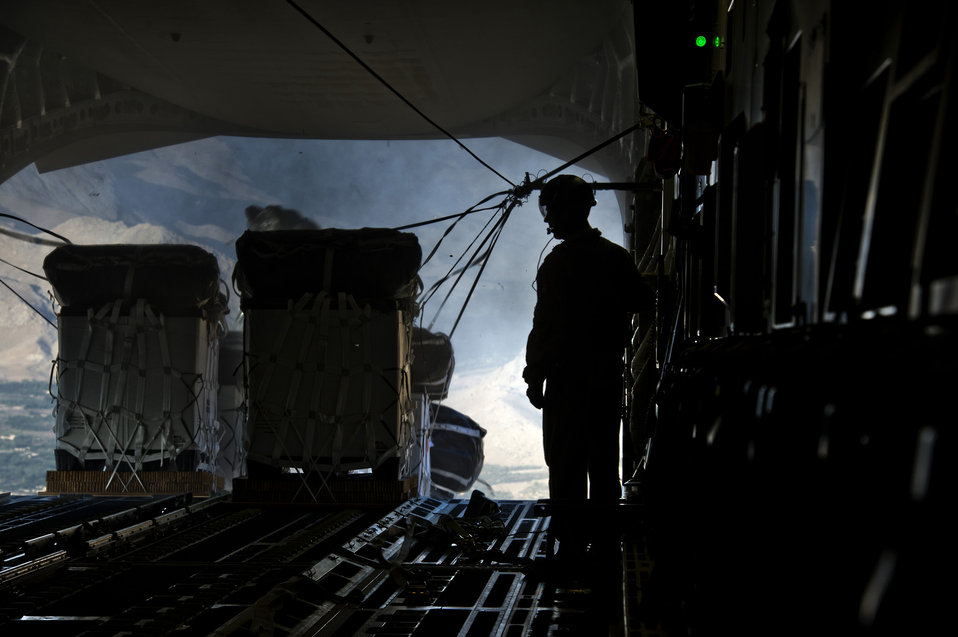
Airdrop over Afghanistan

A member of the 816th Expeditionary Airlift Squadron observes pallets dropped out the back of a C-17 Globemaster III over Afghanistan, Sept. 30, 2011.